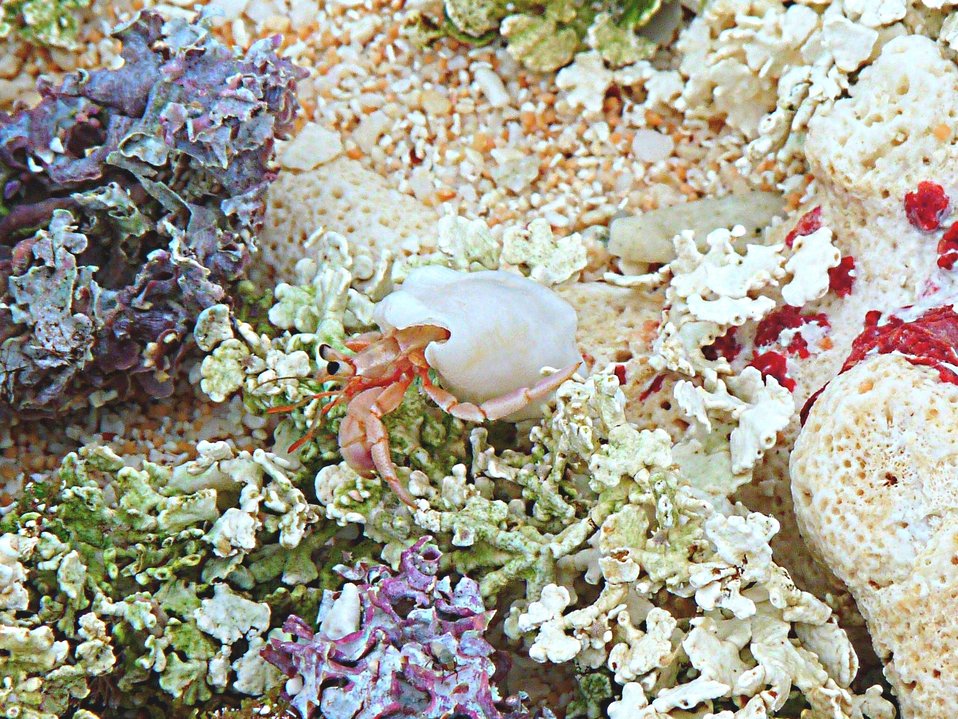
Hermit crab - Guam NWR